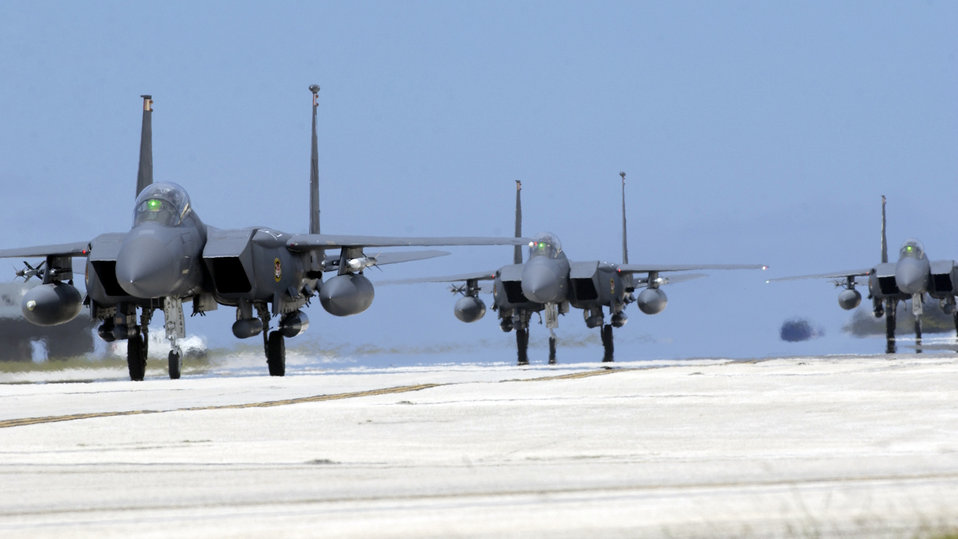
Three taxi

ANDERSEN AIR FORCE BASE, Guam -- Three F-15E Strike Eagles taxi on the flightline here April 29. The aircraft are assigned to the the 391st Fighter Squadron at Mountain Home Air Force Base, Idaho. They are deployed here to add jet fighters to Andersen's bomber and tanker presence. The goal is to enhance regional security and provide opportunities that integrate joint and coalition forces in training.